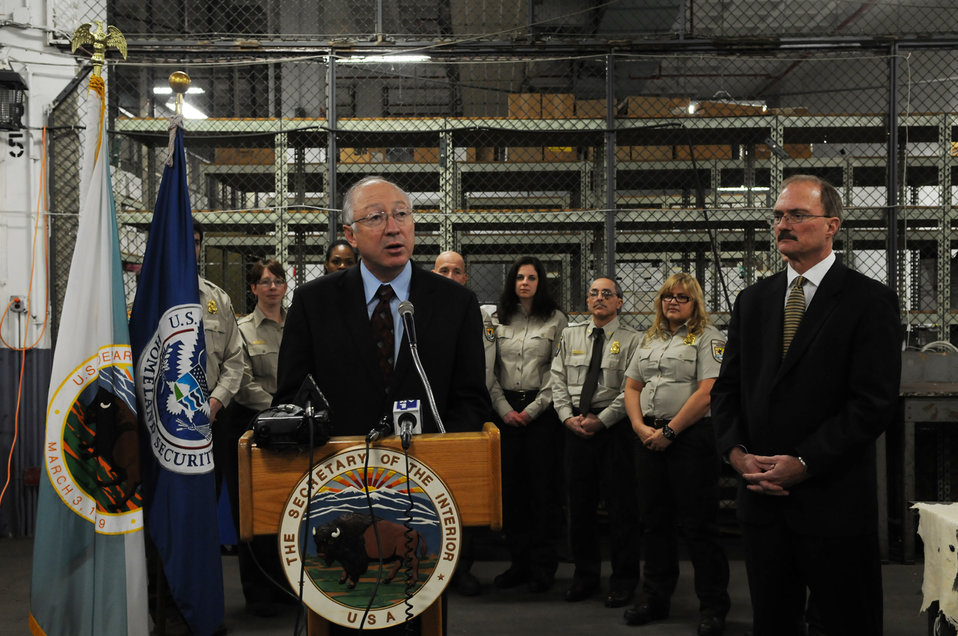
Secretary Salazar giving his speech

On January 20, Secretary of the Interior Ken Salazar visited the Port of New York to announce that the U.S. Fish and Wildlife Service will propose to list the Burmese python and eight other large constrictor snakes that threaten the Everglades and other sensitive ecosystems as “injurious wildlife” under the Lacey Act.